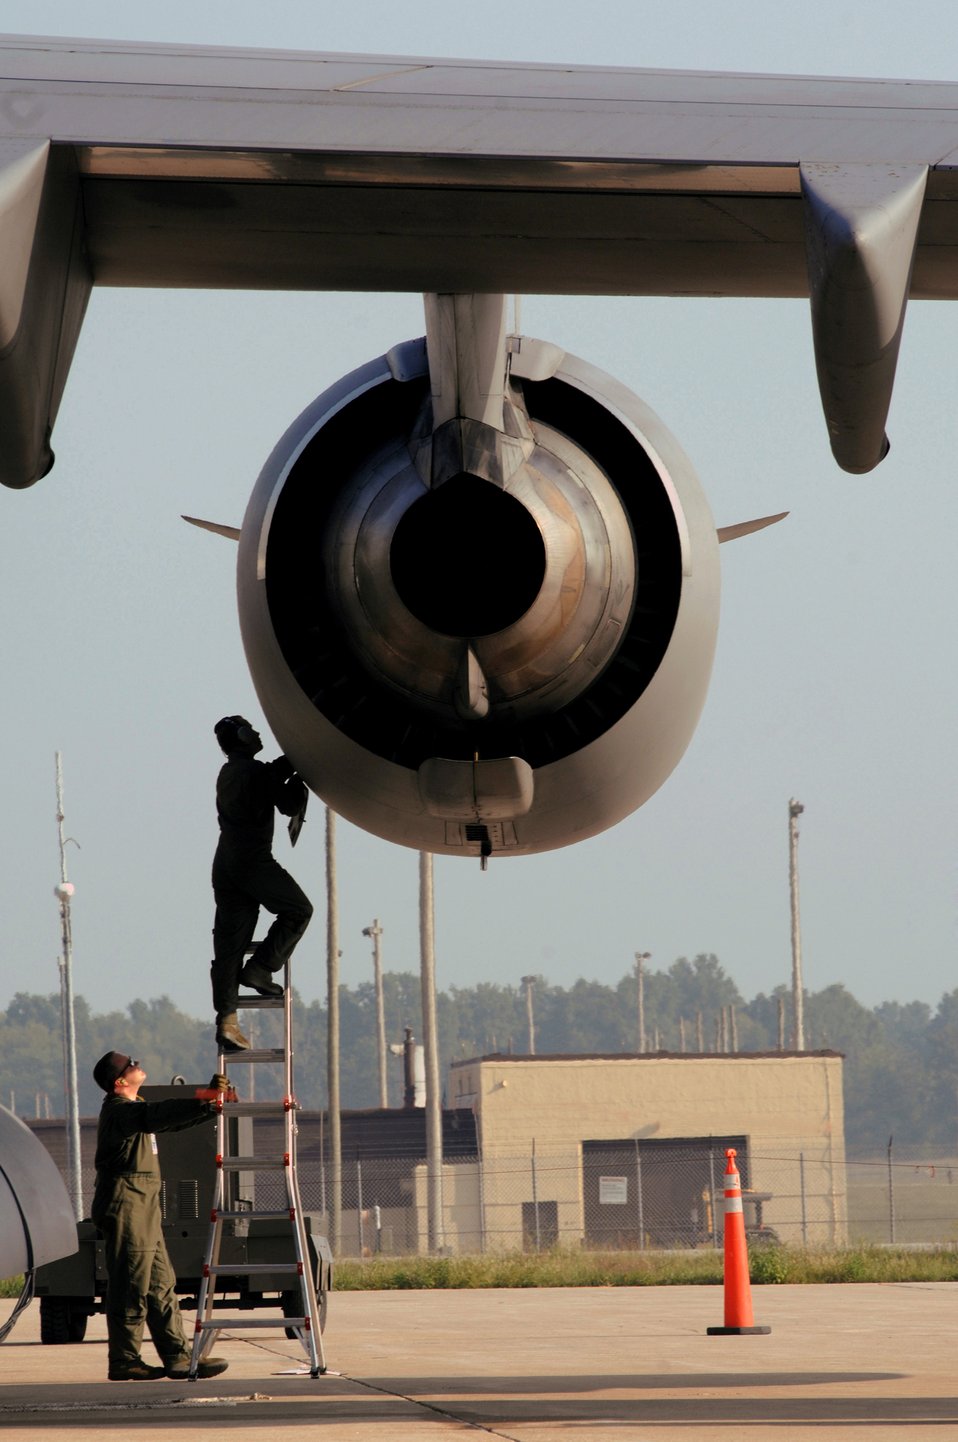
Let's take a look

C-17 Globemaster III crew members perform a pre-flight check before participating in a logistics movement exercise recently at Whiteman Air Force Base, Mo. Airmen participate in these exercises every three to four months to keep their skills sharp for real world missions.